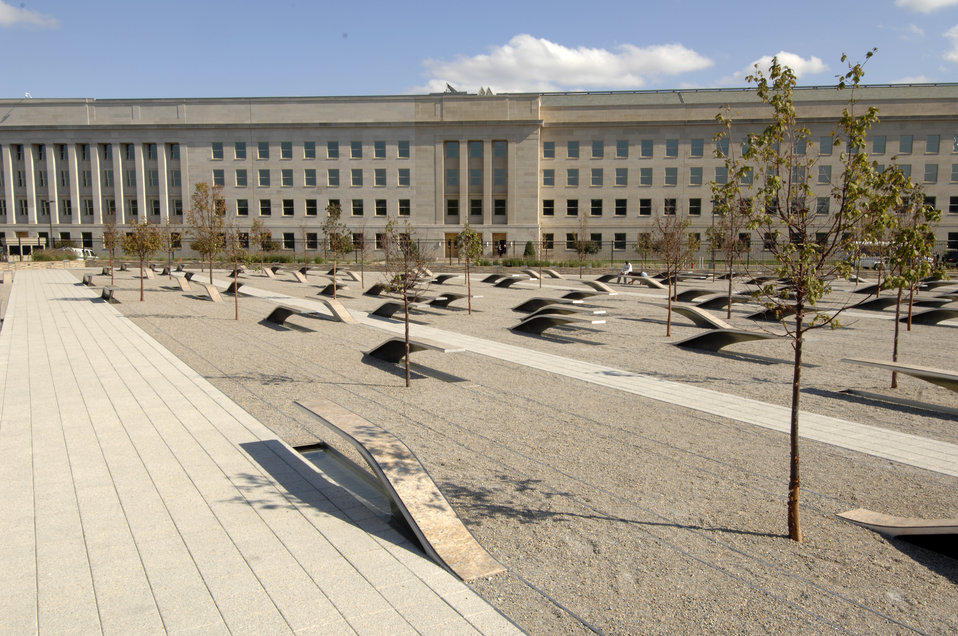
The Pentagon Memorial is designed so that the nation may remember and reflect on the events that occurred on September 11, 2001. To honor the 184 victims, 184 illuminated benches have been arranged according to the victim's ages, starting with Dana Falkenberg, 3, to John Yamnicky Sr., 71, and each bench is engraved with the name of a victim. The benches representing the victims that were inside the Pentagon are arranged so those reading the names will face the Pentagon's south facade, where the plane struck the building. The benches dedicated to victims aboard the plane are arranged so that those reading the engraved name will be facing skyward along the path the plane traveled. If more than one member of a family died during the attack, family names are listed in the reflecting pool under the bench. A wall along the edge of the Memorial begins at a height of 3 inches and rises to a height of 71 inches, the ages of the youngest and oldest victim of the attack, and approximately 85 Paperbark maple trees are planted on the memorial grounds. The Memorial was dedicated and opened to the public on September 11, 2008. This photo was taken at the Pentagon memorial located southwest of the Pentagon in Arlington, Virginia on October 23, 2008.